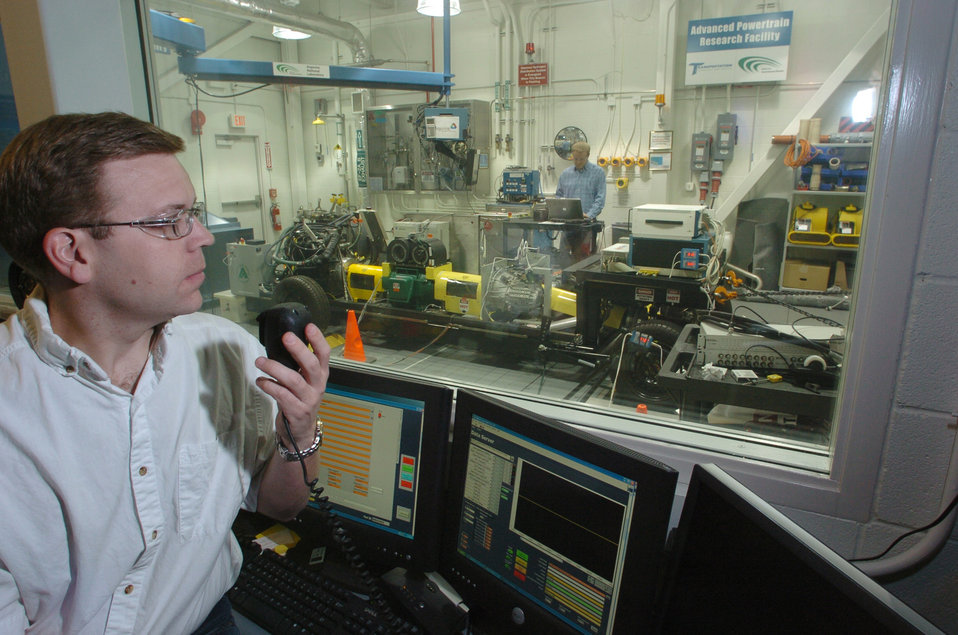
ANL researcher at the Center for Transportation Research monitors a test on the Mobile Advanced Technology Testbed.

The Advanced Powertrain Facility is the nation's premier Hybrid Vehicle Test Laboratory, where the latest equipment and state-of-the-art transportation technology come together for development.